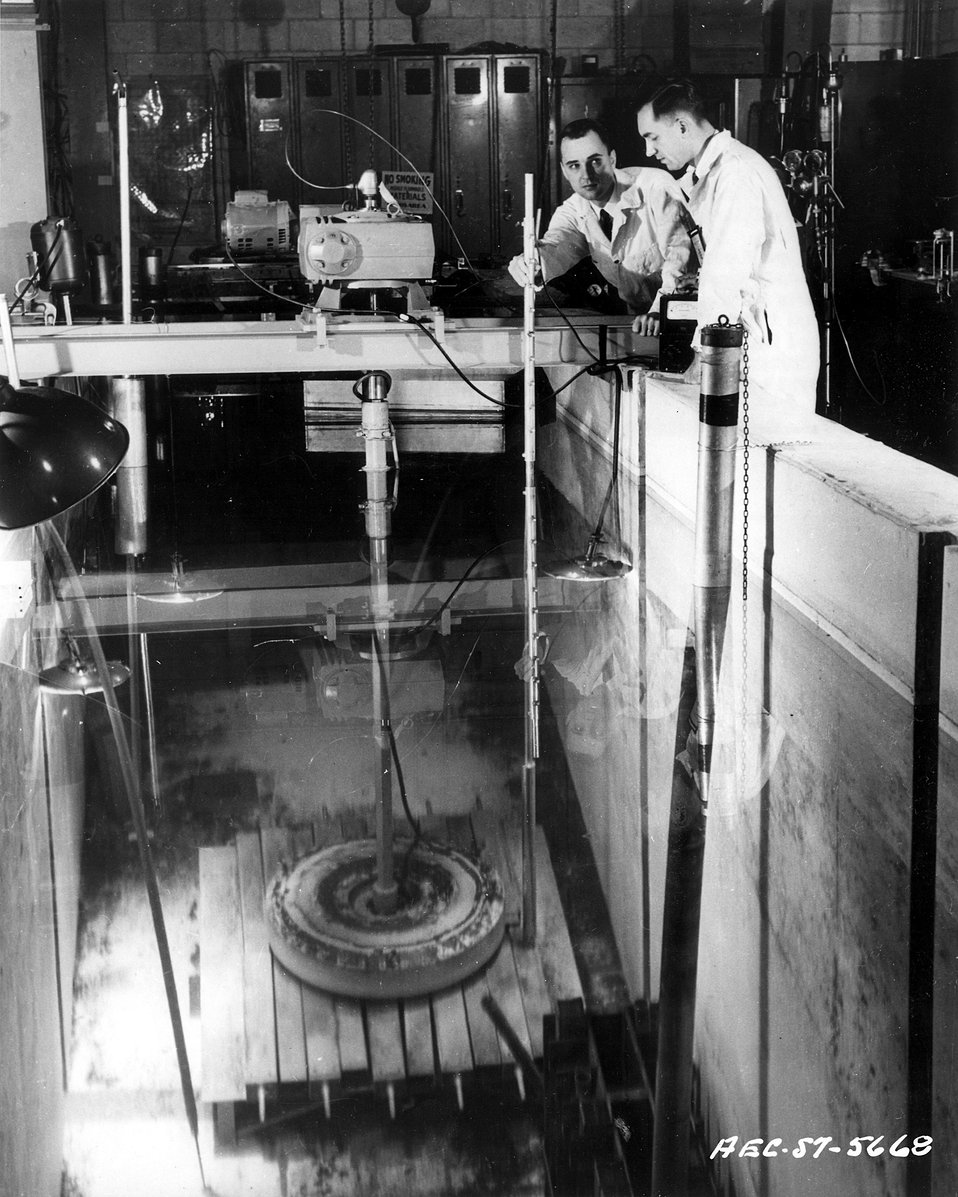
National Reactor Testing Station, Idaho... Vulcanization of a tire by nuclear radiation has been achieved by the B.F. Goodrich Company utilizing the facilities of the Atomic Energy Commission's Gamma Ray Facility at the National Reactor Testing Station, Idaho. Circa 1957.